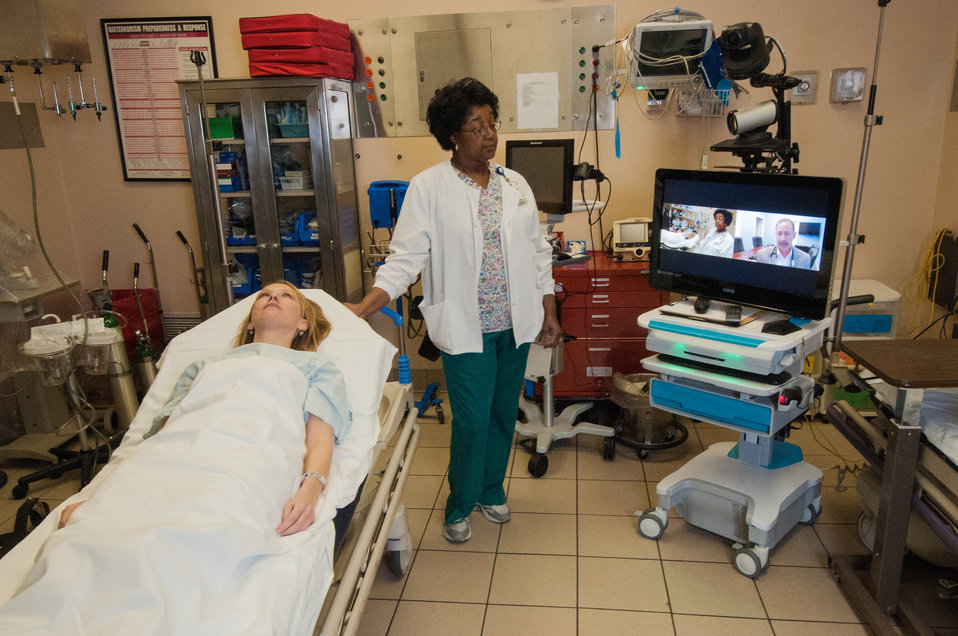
R.J. Taylor Memorial Hospital, Inc. Emergency Room(ER)/ Intensive Care Unite (ICU) Nurse Manager Lynn Grant, RN, in Hawkinsville, GA discusses patients’ diagnosis and symptoms with a doctor in Atlanta, GA via the hospitals Electronic Medical Records System on Mar. 6, 2013. The Electronic Medical Records System is an electronic point-of-care capture of medical data that can be easily accessed and allow for integration across different health care settings with internet-work connected information systems. Such records may include a wide range of data in comprehensive or summary form, including demographics, medical history, medication allergies, immunization status, laboratory test results, radiology images and billing information. The hospital purchased the Electronic Medical Records System under an incentive program by the Federal government through the U.S. Department of Agriculture (USDA) Rural Development (RD) Community Facilities Loan (CF) that ensures fiscally responsive access to superior quality integrated health care.